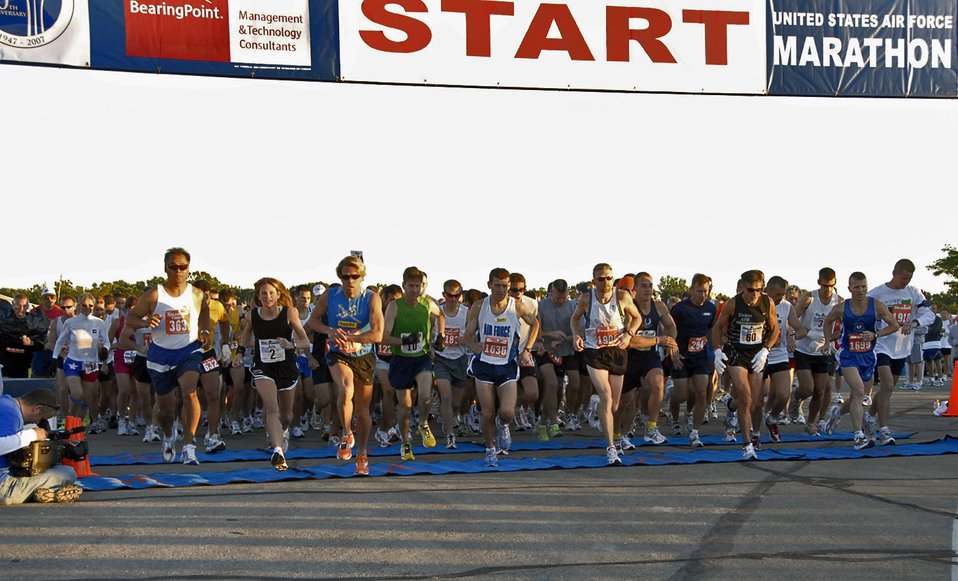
U.S. Air Force Marathon official results announced

Marathoners take off for the 11th annual U.S. Air Force Marathon Sept. 15 at Wright-Patterson Air Force Base, Ohio. Josh Cox (third from left, wearing orange shoes) of San Diego and Mammoth Lakes, Calif., would go on to win the event with a record-breaking time of 2:20:57. More than 6,300 runners participated in five marathon events.